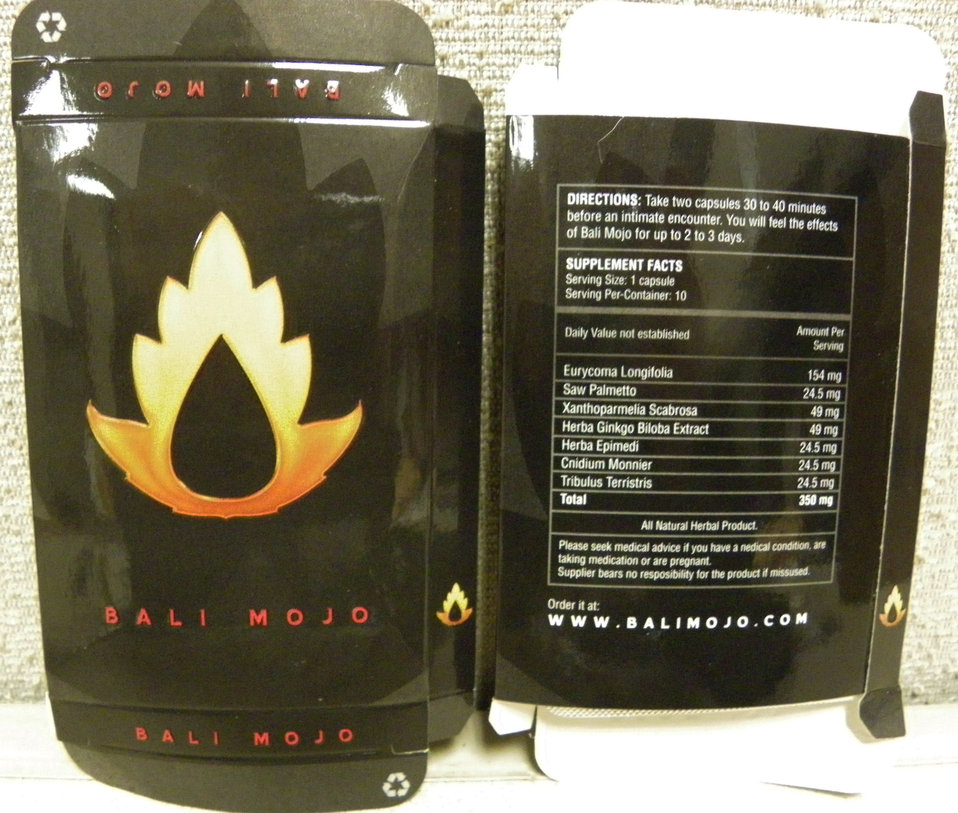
Bali Mojo

January 28, 2014 - The FDA is advising consumers not to purchase or use Bali Mojo, a product promoted and sold as a dietary supplement for sexual enhancement. The product was found to contain undeclared tadalafil.